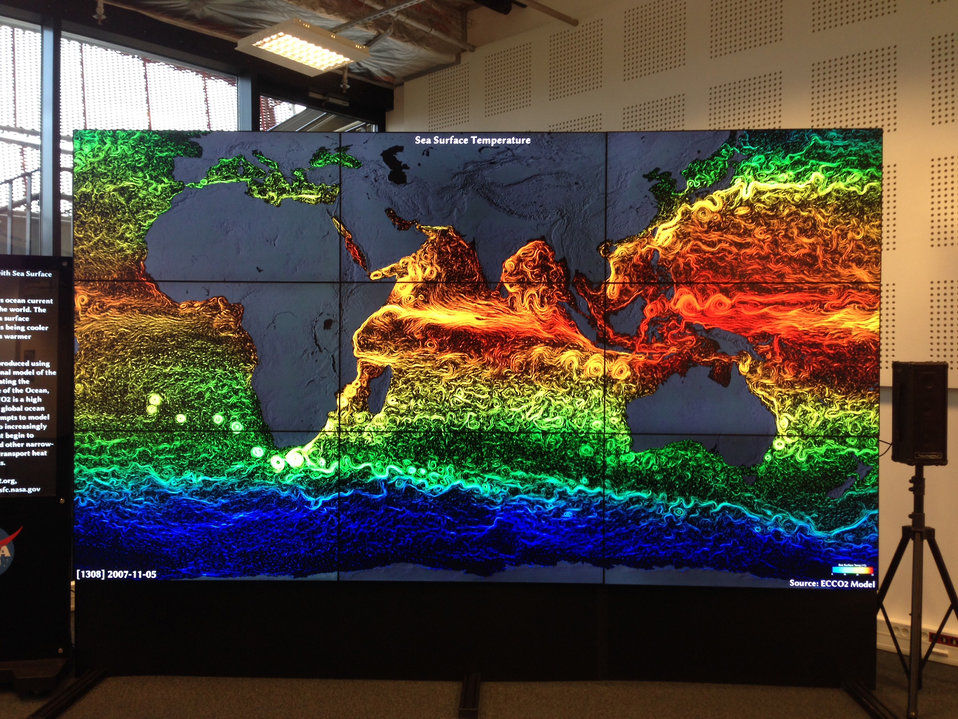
NASA's Hyperwall shows the sea surface temperature at the U.S. Center at the 19th Session of the Conference of the Parties to the UN Framework Convention on Climate Change (COP19) in Warsaw, Poland, on November 19, 2013.